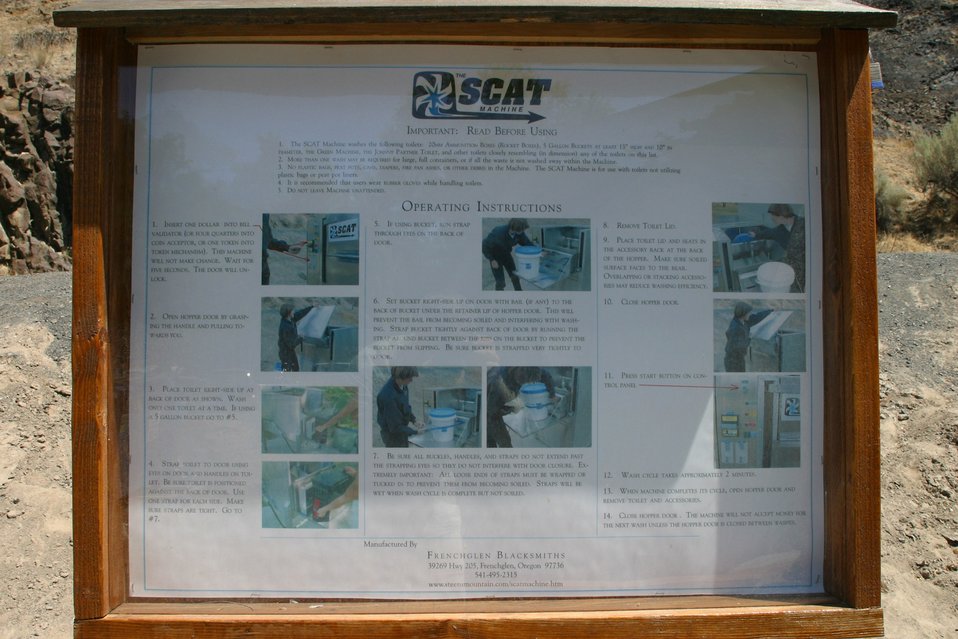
BLM Scat Machine located at the Maupin City Park.